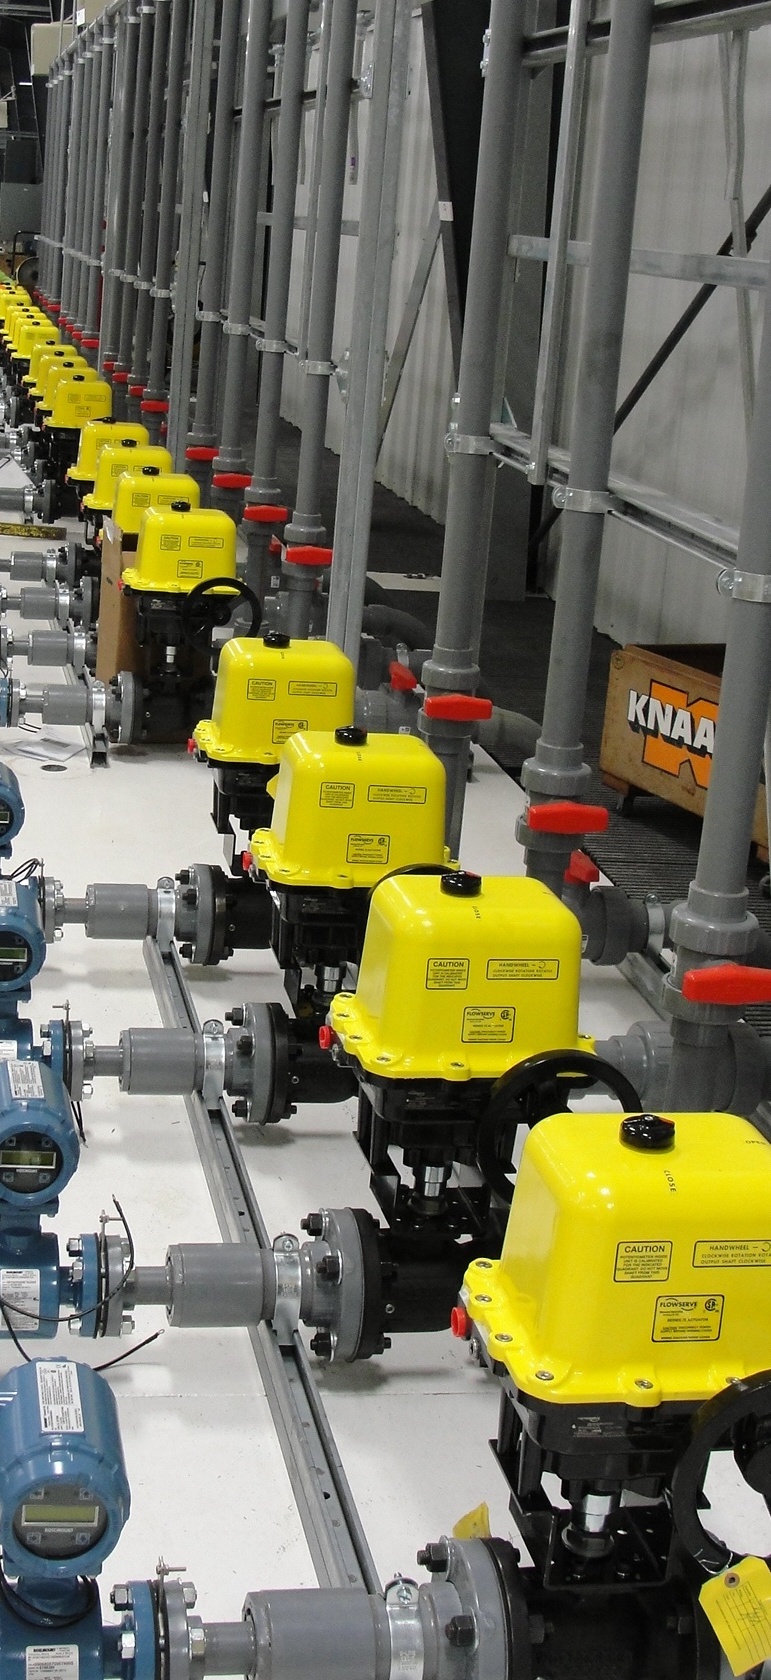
Hanford Treats Record Amount of Groundwater

Equipment inside a groundwater treatment facility at Hanford.

American Recovery and Reinvestment Act work to expand Hanford’s capacity for treating contaminated
groundwater led to the 2011 record amount. The Recovery Act funded the installation of more
than 300 groundwater wells and construction of two groundwater treatment facilities. The 100-DX
system began operating in late 2010 and the 200 West system is scheduled to begin operating in
2012. Those Recovery Act investments will enable Hanford to treat millions of additional gallons of
groundwater in 2012 and subsequent years.